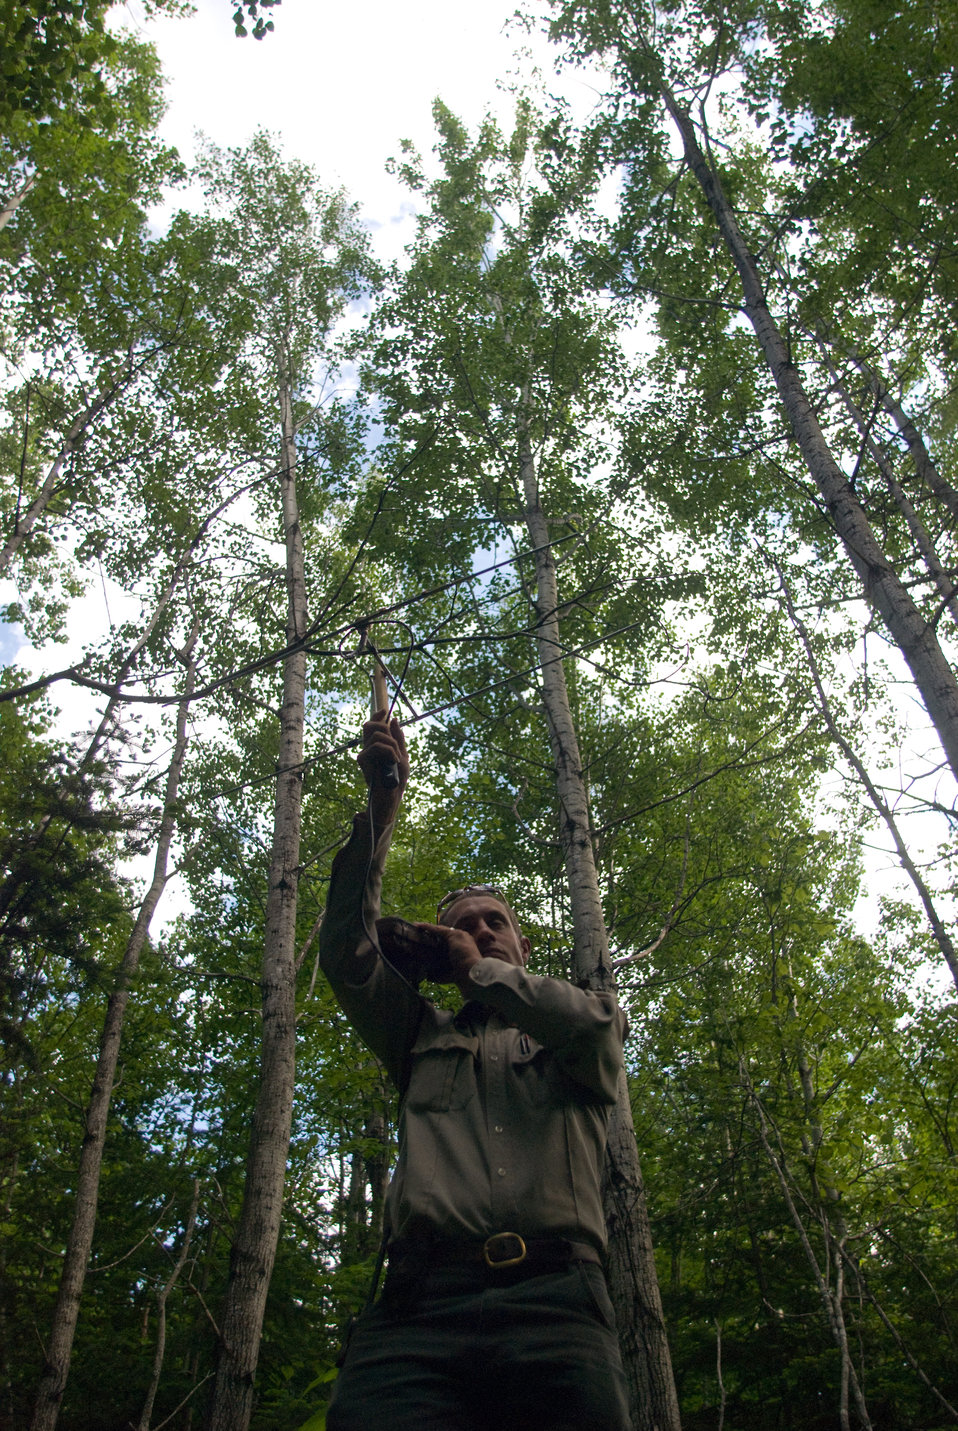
Locating via telemetry

A wildlife biologist of Maine's Department of Inland Fisheries and Wildlife tracks the location of an adult Canada Lynx. Prior to these outings, adult Lynx were trapped and tagged with GPS/Radio collars. Using aircraft, biologists could then track the location of the lynx and confirm whether or not they were reproducing by their movements.